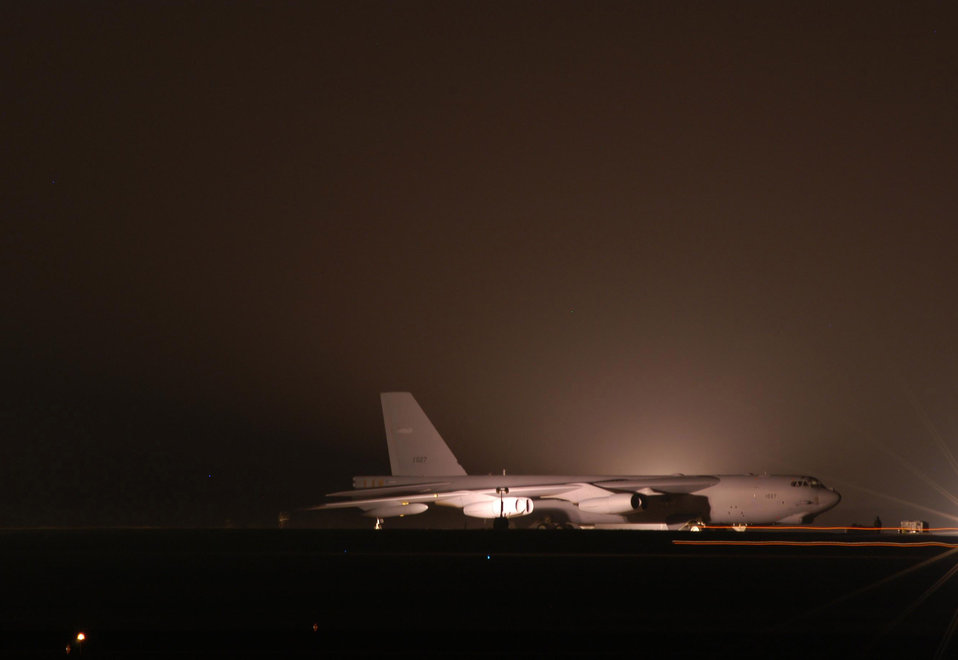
Waiting Buff

OPERATION IRAQI FREEDOM -- A B-52 Stratofortress waits for orders at this forward-deployed location. Bombers from this location are participating in the effort to disarm the Iraqi regime.